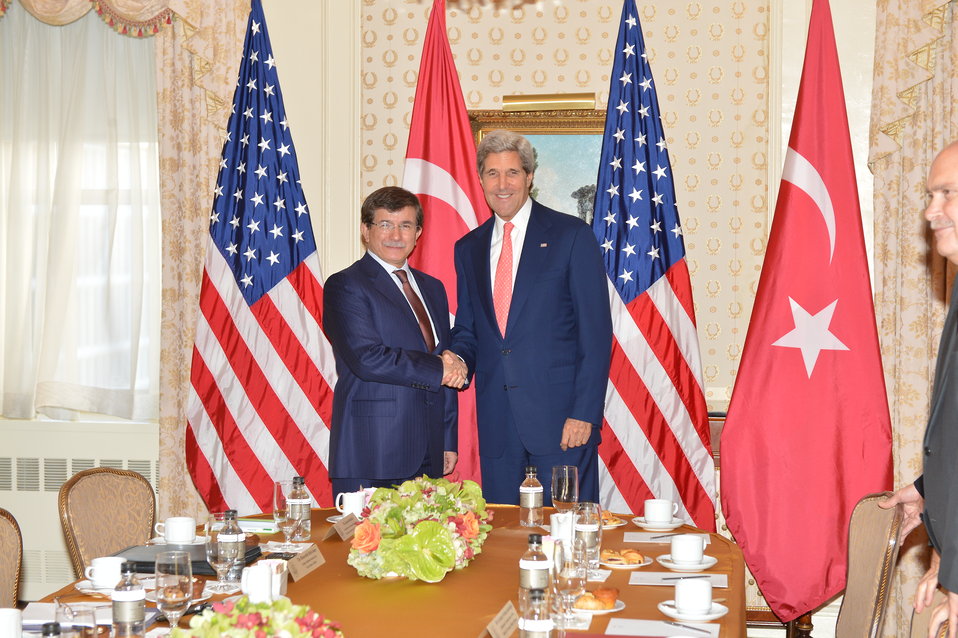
Secretary Kerry Meets With Turkish Foreign Minister Davutoglu

U.S. Secretary of State John Kerry holds a bilateral meeting with Turkish Foreign Minister Ahmet Davutoglu in New York City on September 23, 2013.